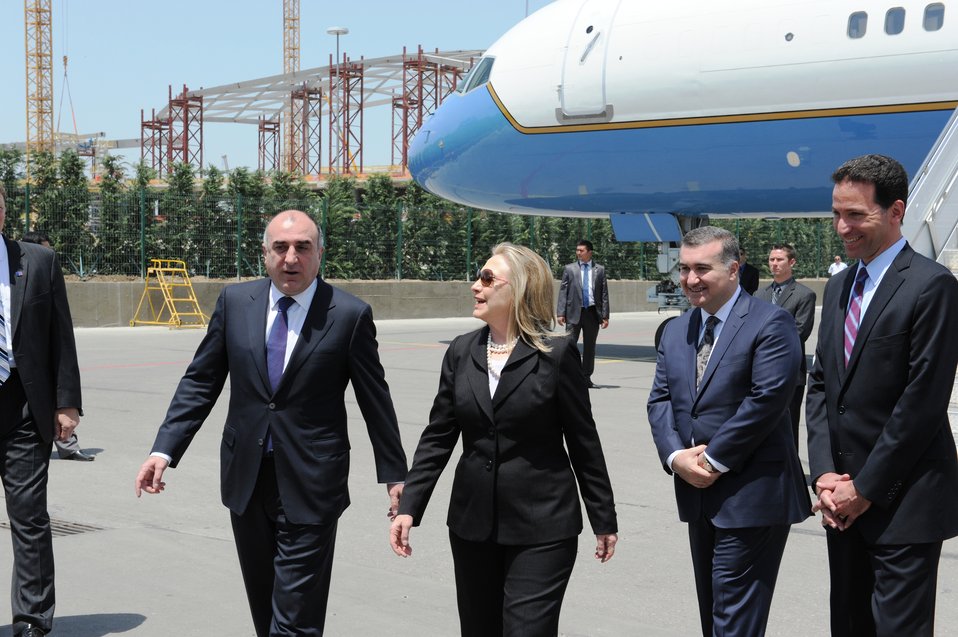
Secretary Clinton Is Greeted By Azerbaijani Foreign Minister Mammadyarov

U.S. Secretary of State Hillary Rodham Clinton is greeted by Azerbaijani Foreign Minister Elmar Mammadyarov, left, and Embassy Baku Charge d'Affaires Adam Sterling, far right, upon her arrival in Baku, Azerbaijan, on June 6, 2012.